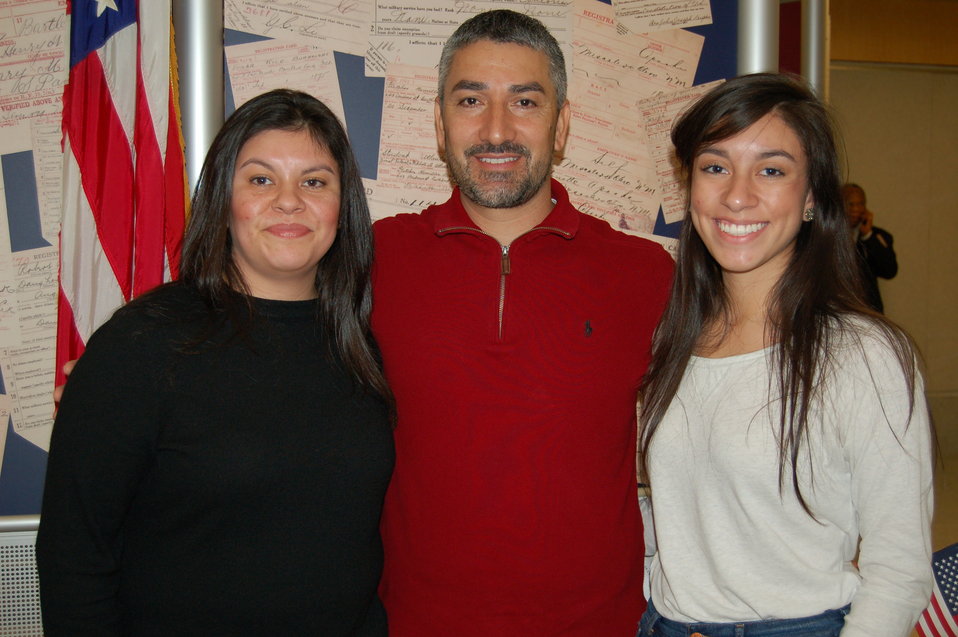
New Citizens